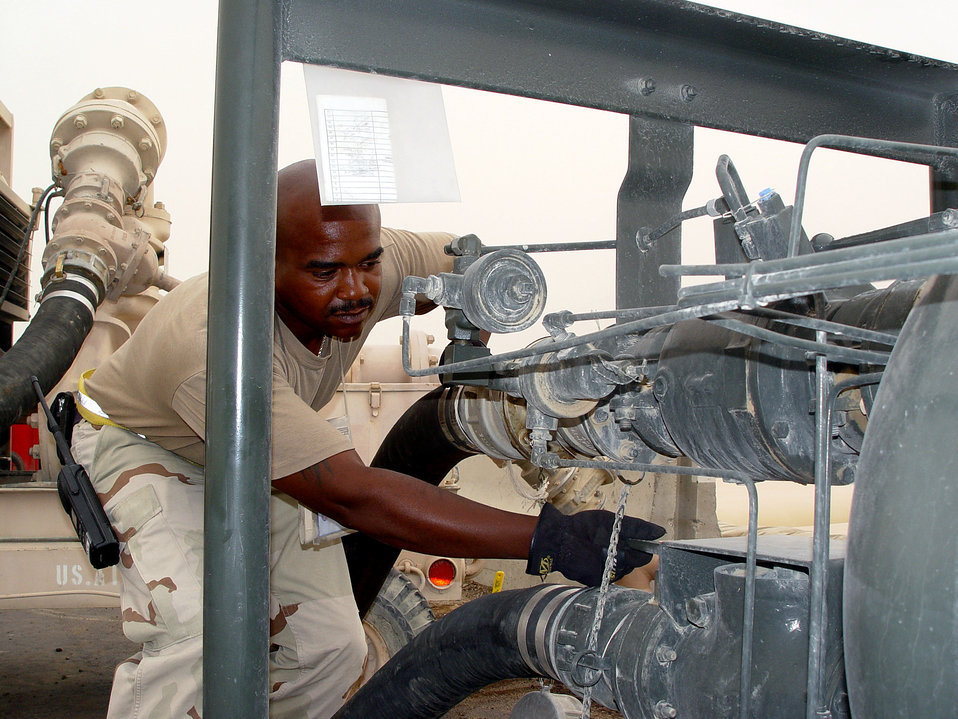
POLS troop

OPERATION IRAQI FREEDOM -- Tech. Sgt. George Anderson, 380th Expeditionary Logistics Readiness Squadron petroluem, oil and lubricants supervisor, refuels a coalition aircraft from a fuel bladder at a forward deployed location. Anderson is deployed from Seymour Johnson Air Force Base, N.C.